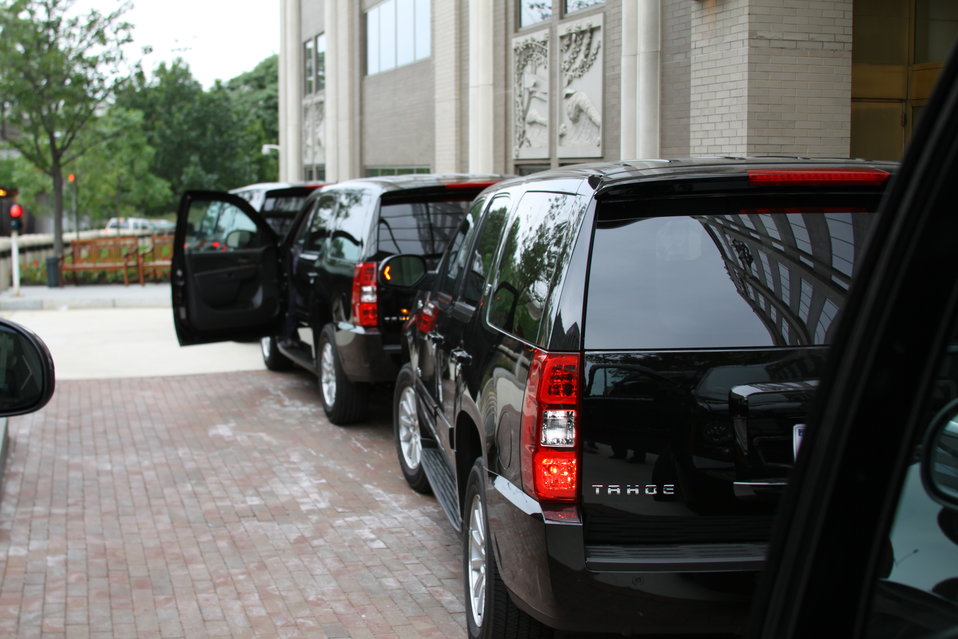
Tahoes 020